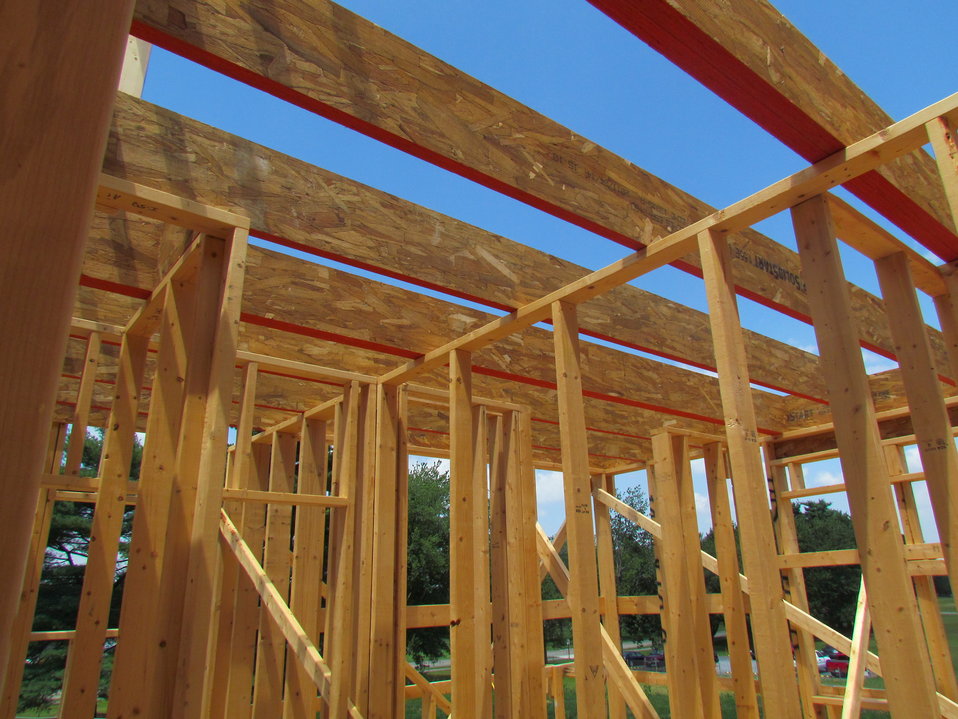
Net-Zero Energy Residential Test Facility - Picture taken looking through attic trusses and second floor framing.